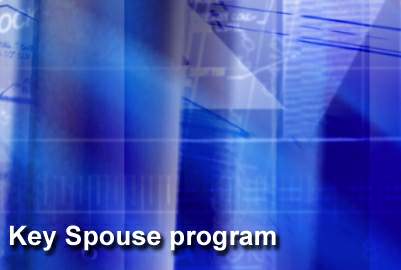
Air Force officials launch updated Key Spouse program

As part of the July 2009-July 2010 Year of the Air Force Family initiative, the service's senior leaders have announced the launch of a revised and standardized Key Spouse program.